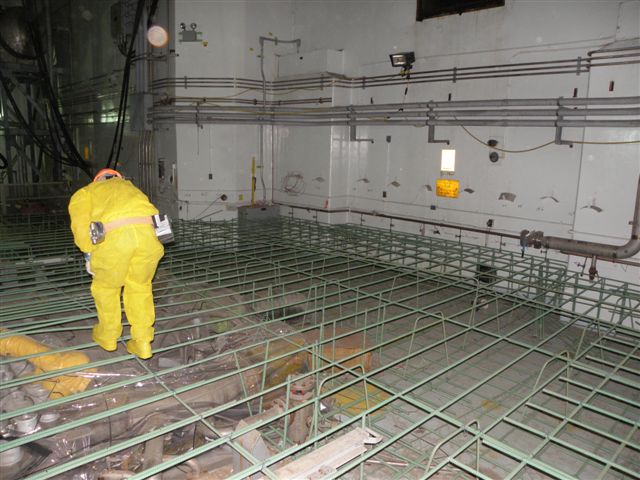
P Reactor

First rebar mat being installed at 105-P Reactor Vessel Cap